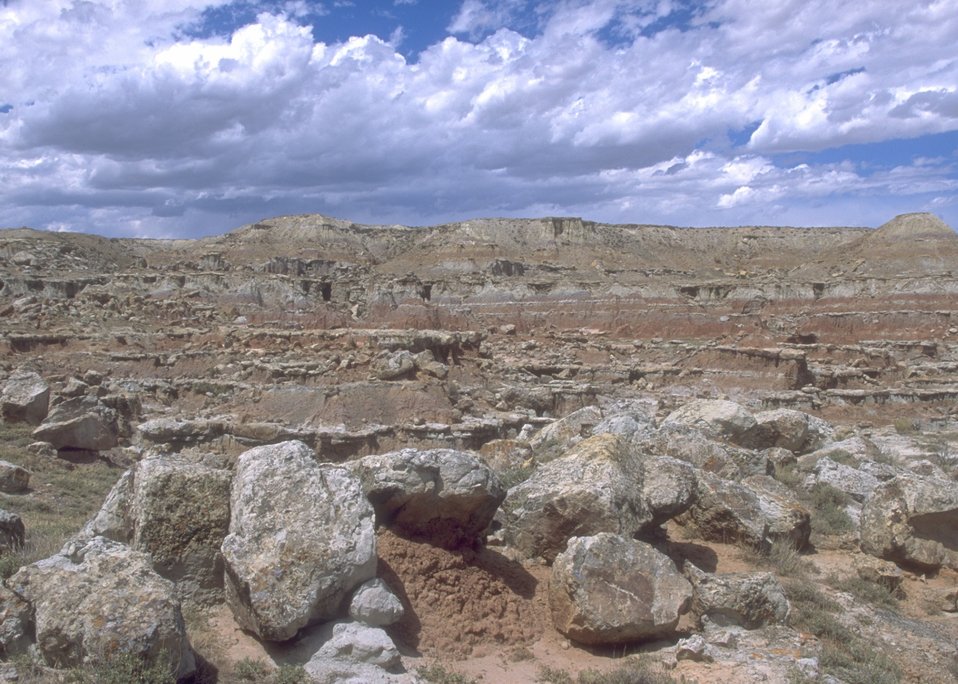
Gooseberry Interpretive Area, Worland Field Office.